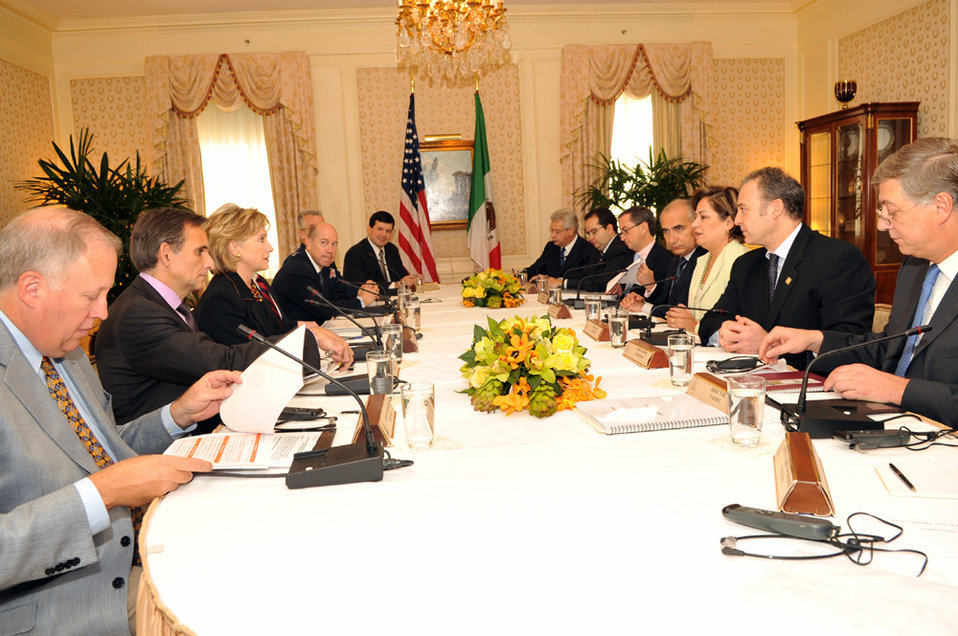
UNGA 2009: Secretary Clinton Meets With U.S.-Mexico High Level Group

U.S. Secretary of State Hillary Rodham Clinton meets with U.S.-Mexico High Level Group at the Waldorf Astoria hotel in New York City, New York September 26, 2009.